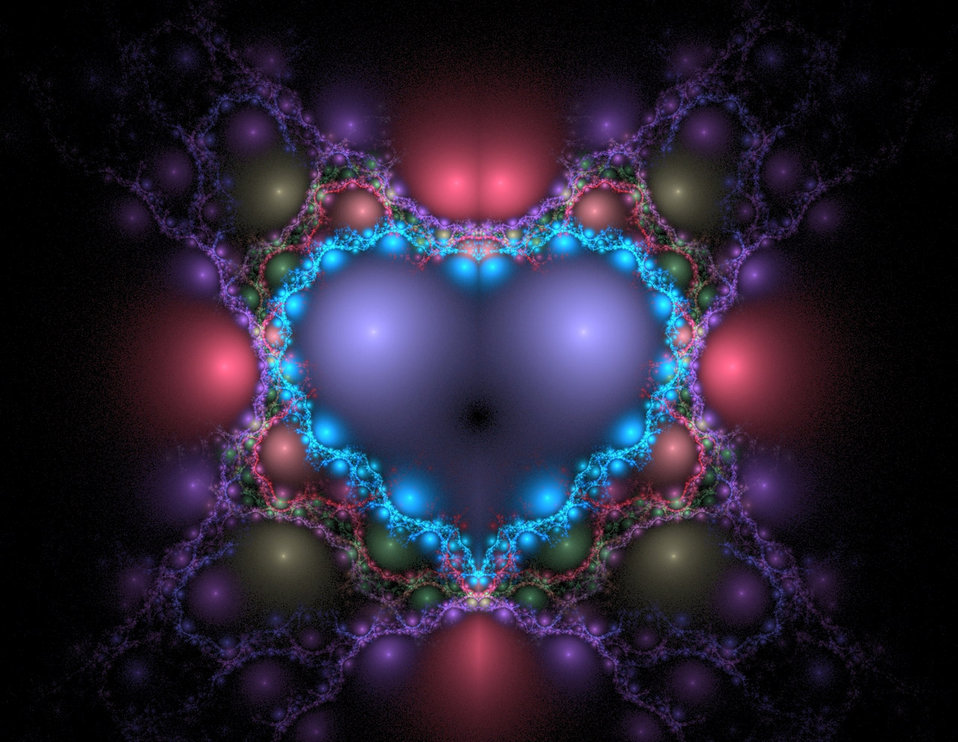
Blue heart

Fractal image with help from a script.